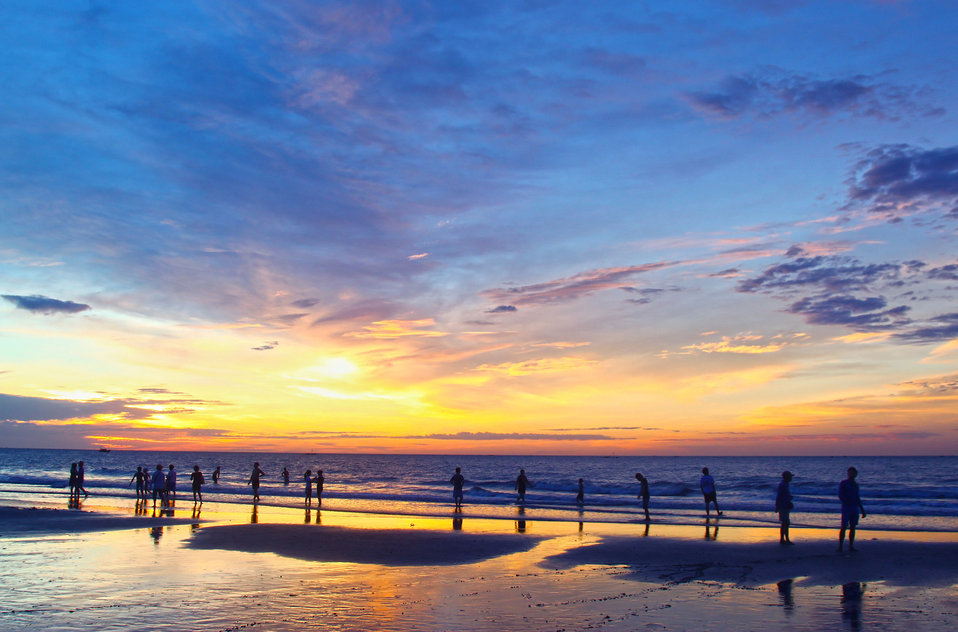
Sunrise #7

Sunrise in sam son beach, việt nam.